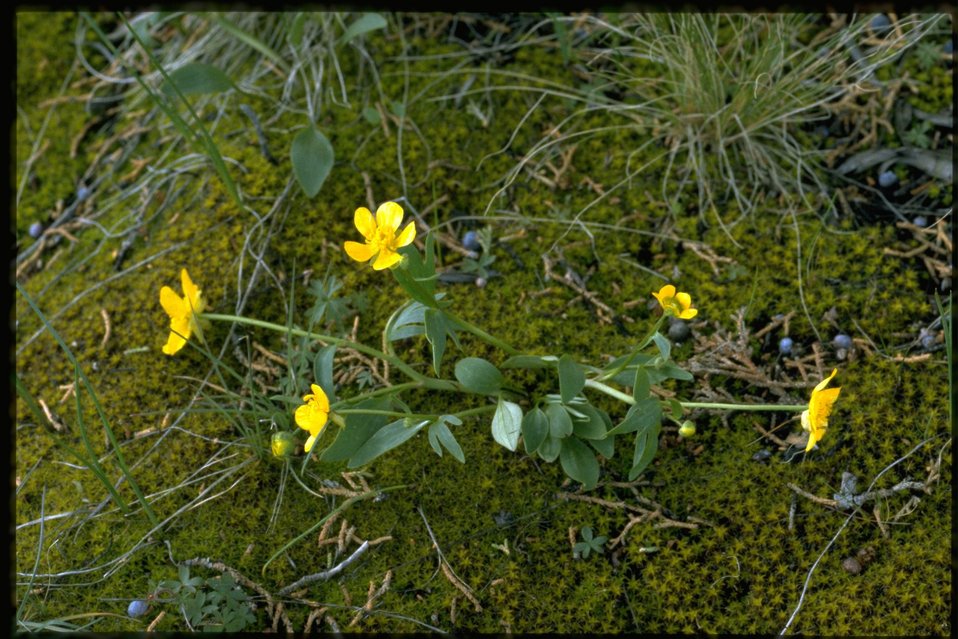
Farshot of Sagebrush Buttercup, Ranunculus Glaberrimus, wildflowers.